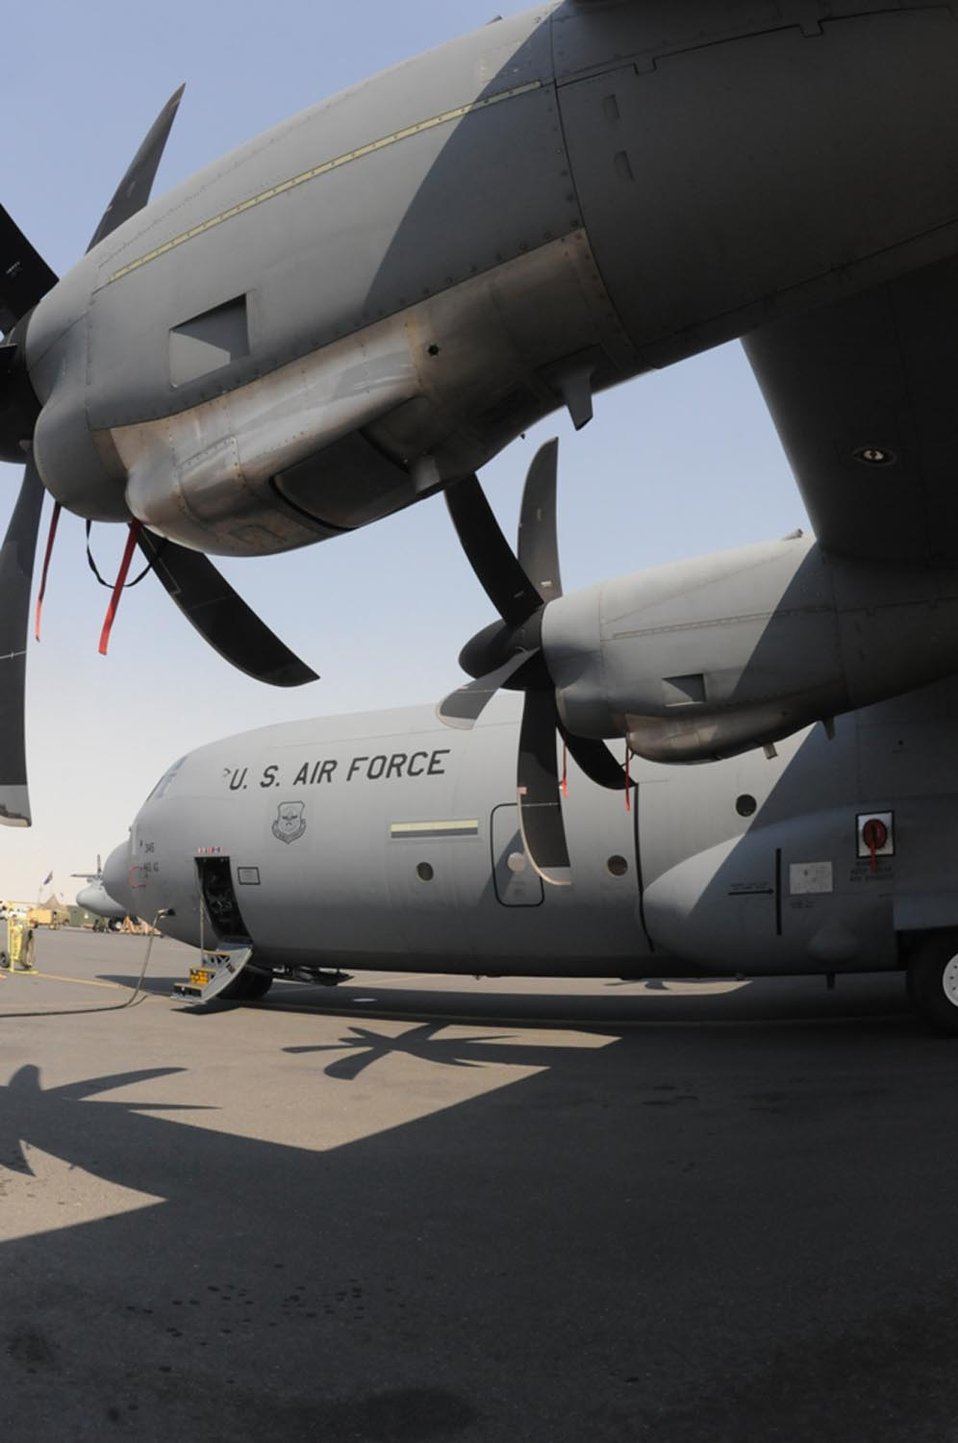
C-130J deploys to Southwest Asia

A C-130J Hercules sits on the flightline after arriving to the 379th Air Expeditionary Wing Feb. 8 at a Southwest Asia air base. The C-130J is from the 41st Airlift Squadron from Little Rock Air Force Base, Ark.